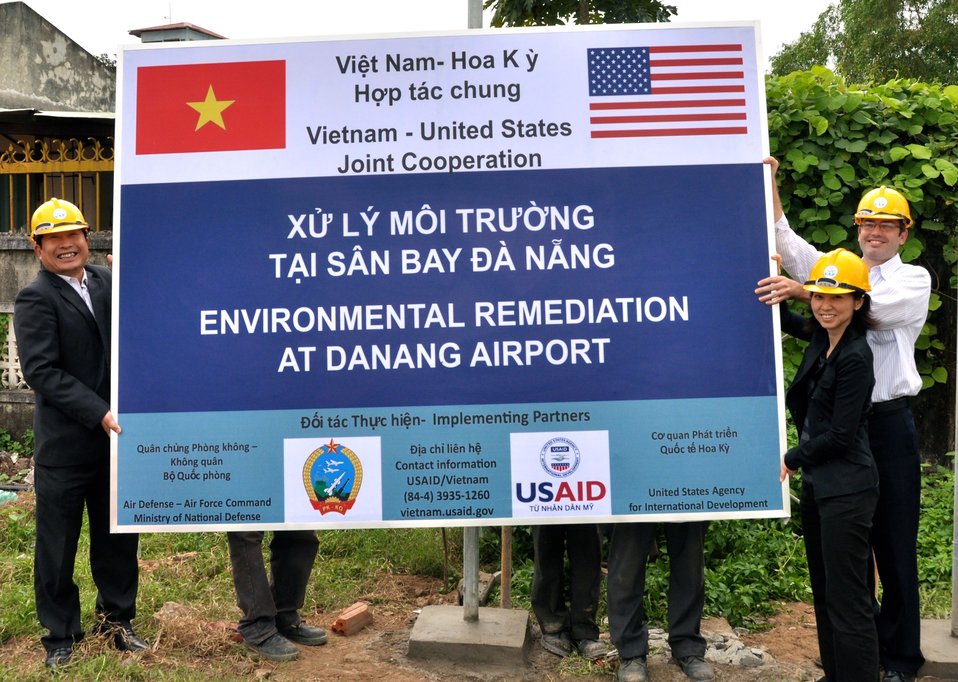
Site Preparation for Environmental Remediation of Dioxin Contamination at Danang Airport

Danang Airport, January 22, 2013